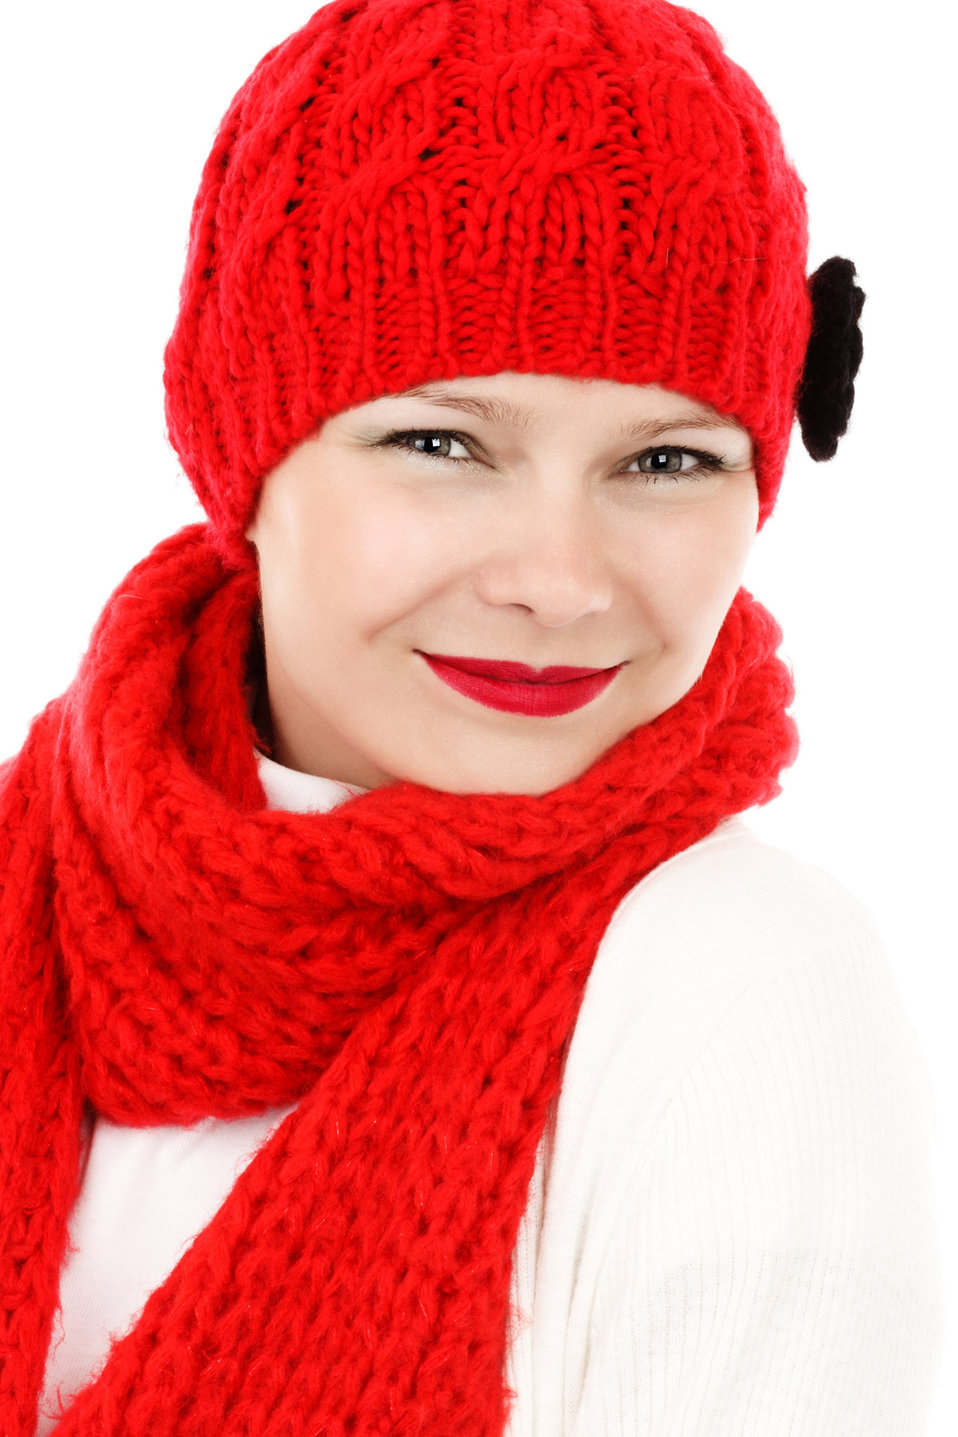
Winter woman portrait

Young woman in red winter clothes.